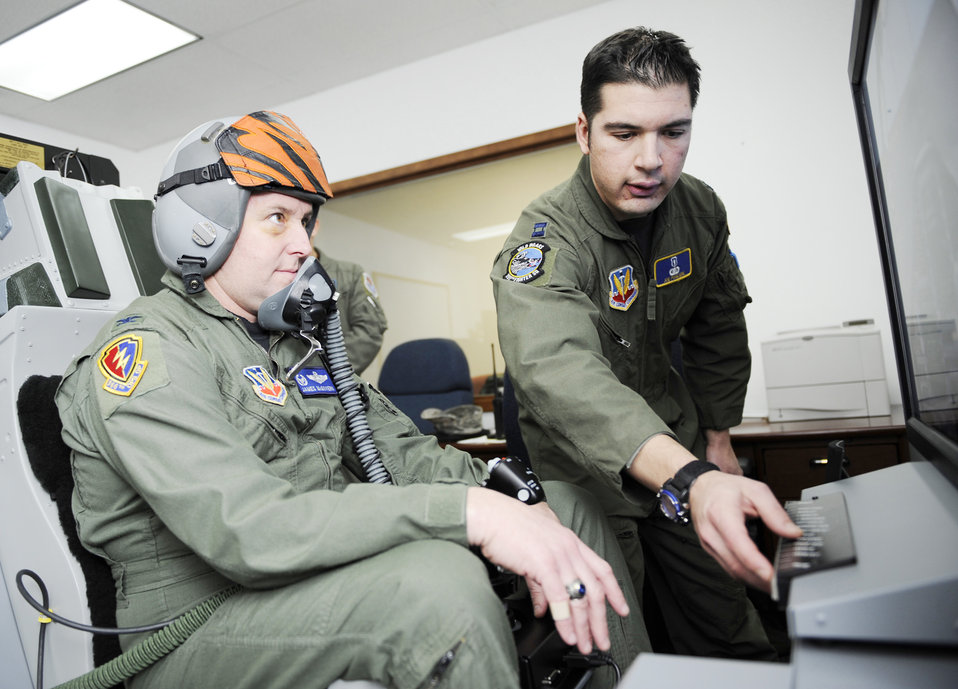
Mountain Home AFB receives hypoxia simulator

Capt. Joseph Pugliese shows Col. James McGovern, 366th Operations Group commander, the controls for the simulator-based hypoxia demonstrator for fighter aircrew Dec. 16, 2009, at Mountain Home Air Force Base, Idaho. Captain Pugliese is an aerospace and operational physiologist with the 366th Aerospace Medicine Squadron.